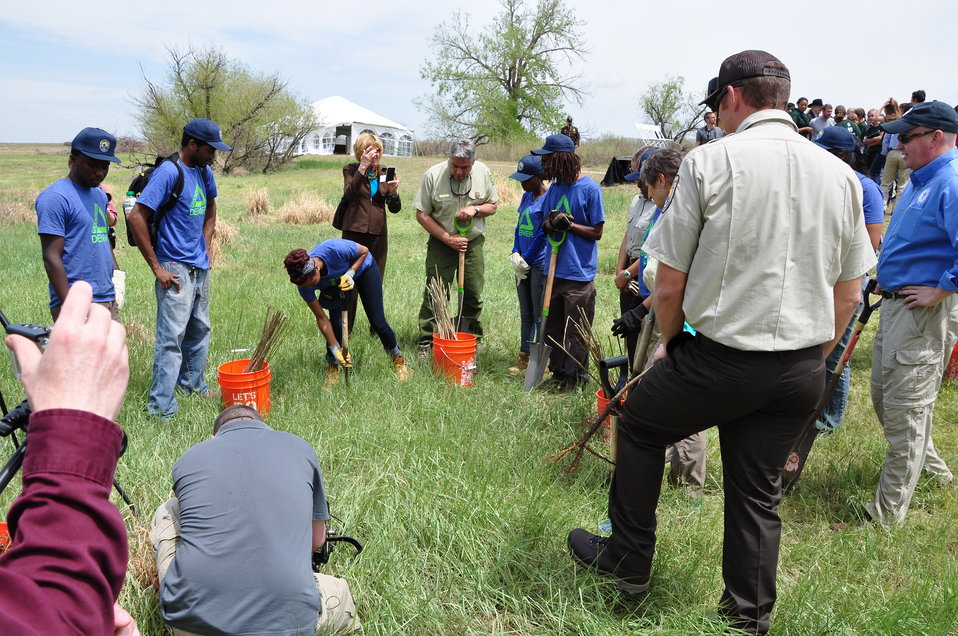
Groundwork Denver Members Demonstrate How to Plant Cottonwood Trees